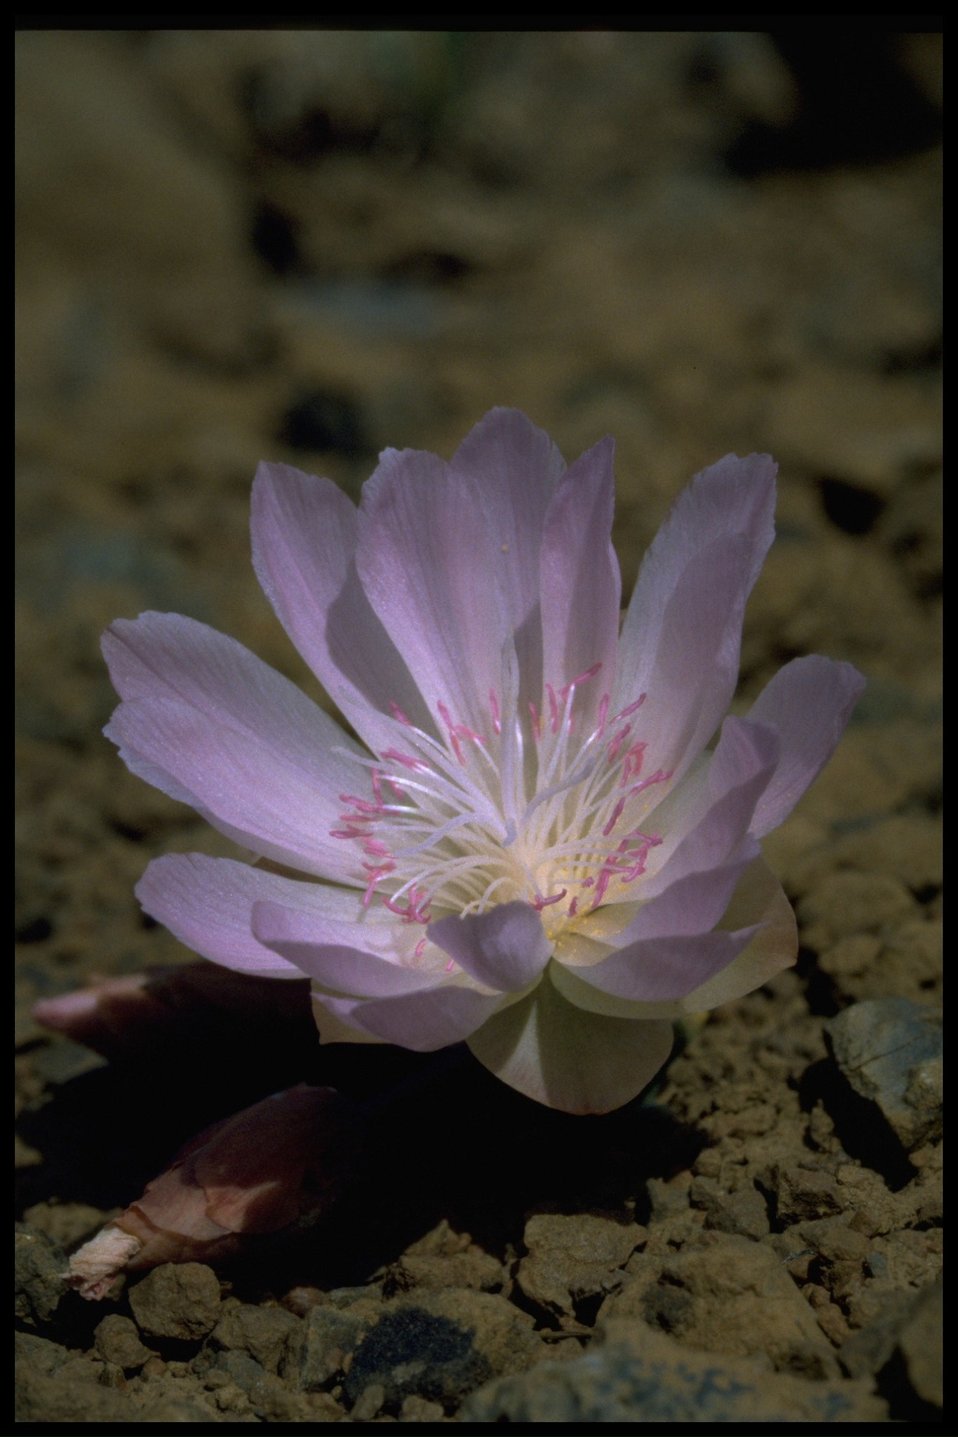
Closeup shot of Bitterroot wildflower.